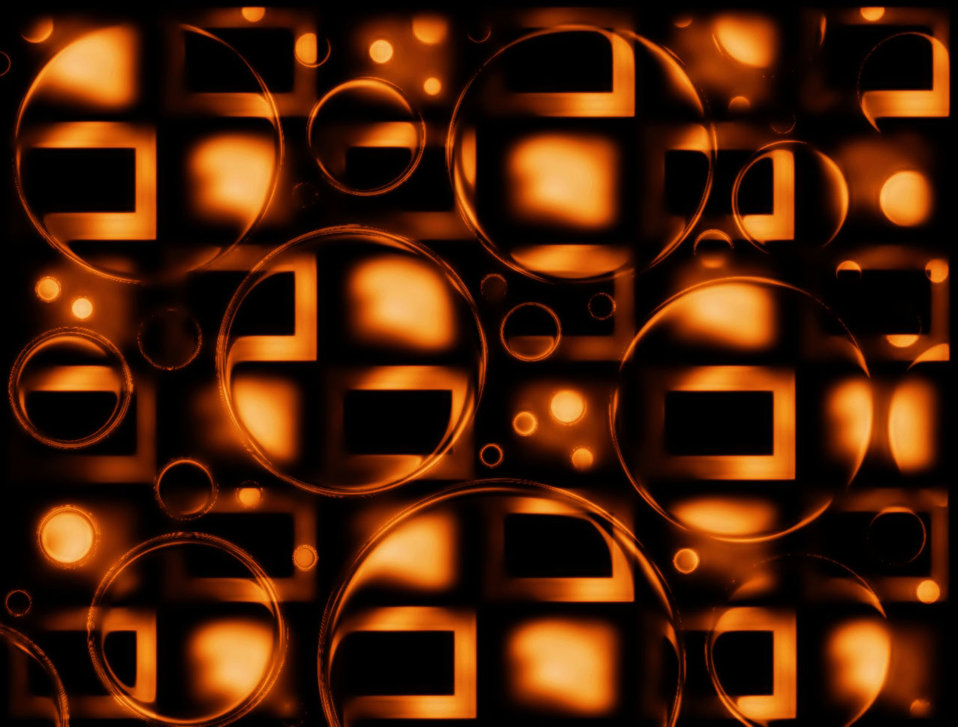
Clear brown bubbles

Brown bubbles.